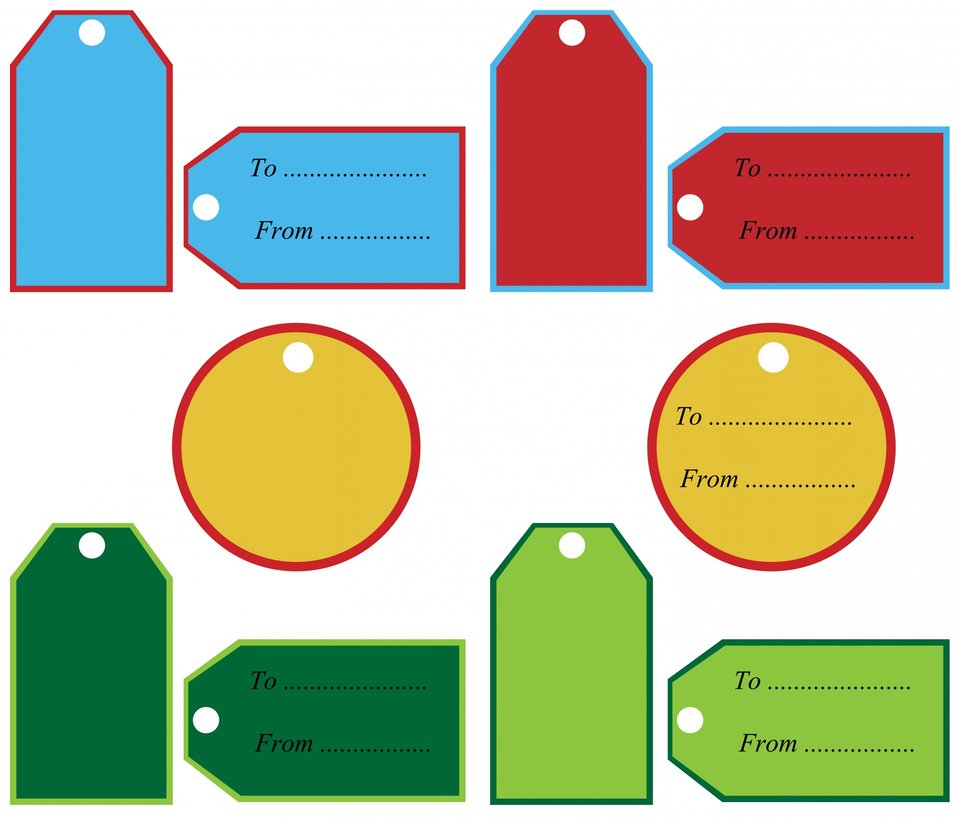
Gift tags clipart

Blank colorful gift tags clipart for your design and text.